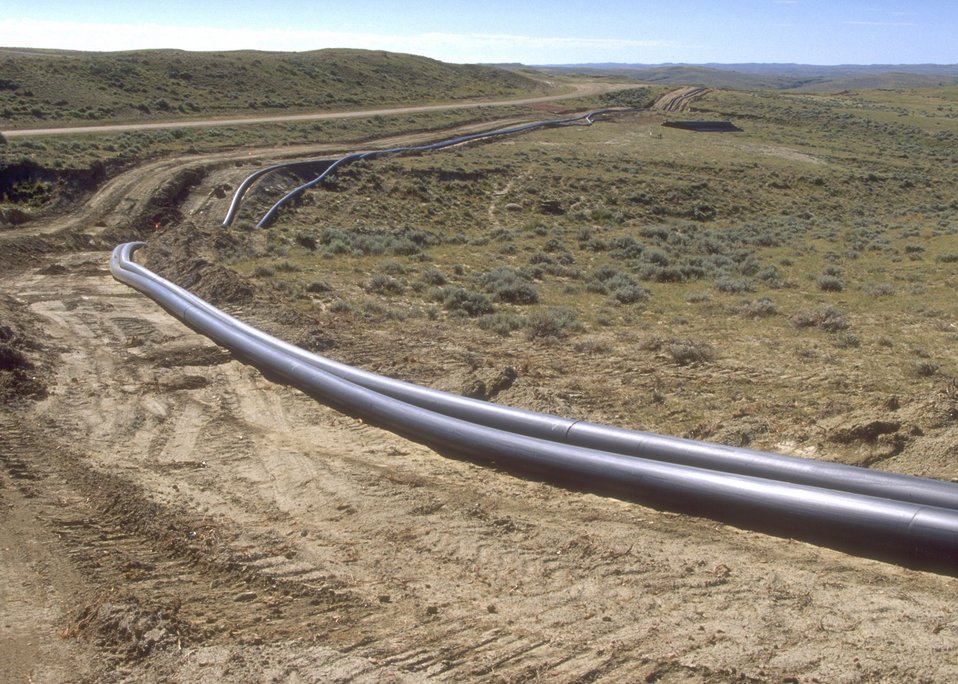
Construction for coal bed methane development, Buffalo Field Office.